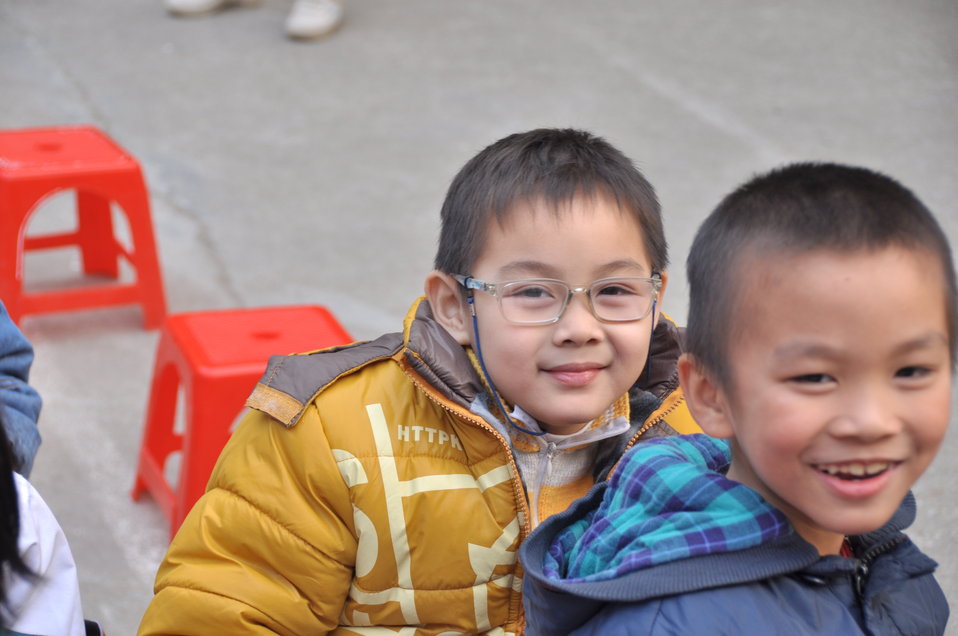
USAID supports distribution of eyeglasses to pupils and teachers in Quoc Oai, Hanoi.

Kieu Phu Junior Secondary School, Quoc Hoai, Hanoi, December 23, 2013.